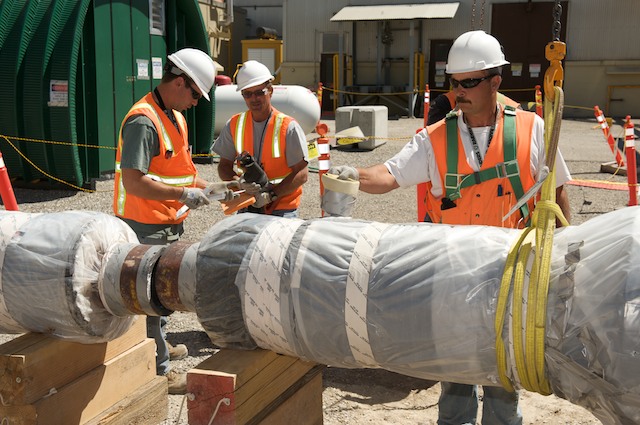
Recovery Act work